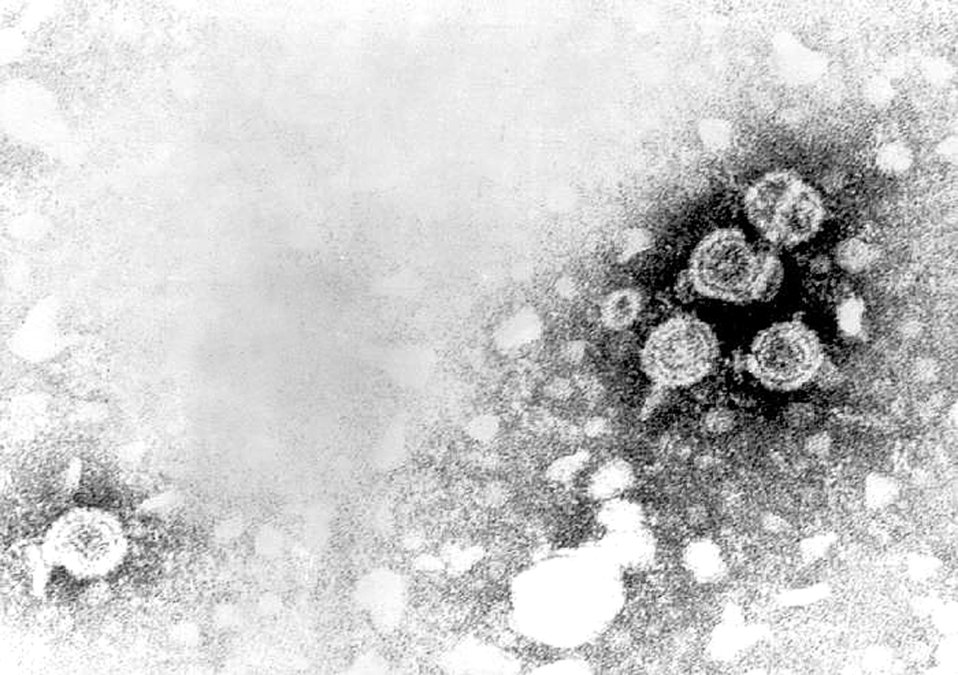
This transmission electron micrograph (TEM) revealed the presence of hepatitis B virions. The large round virions are known as Dane particles. See PHIL 10755, for a colorized version of this image.